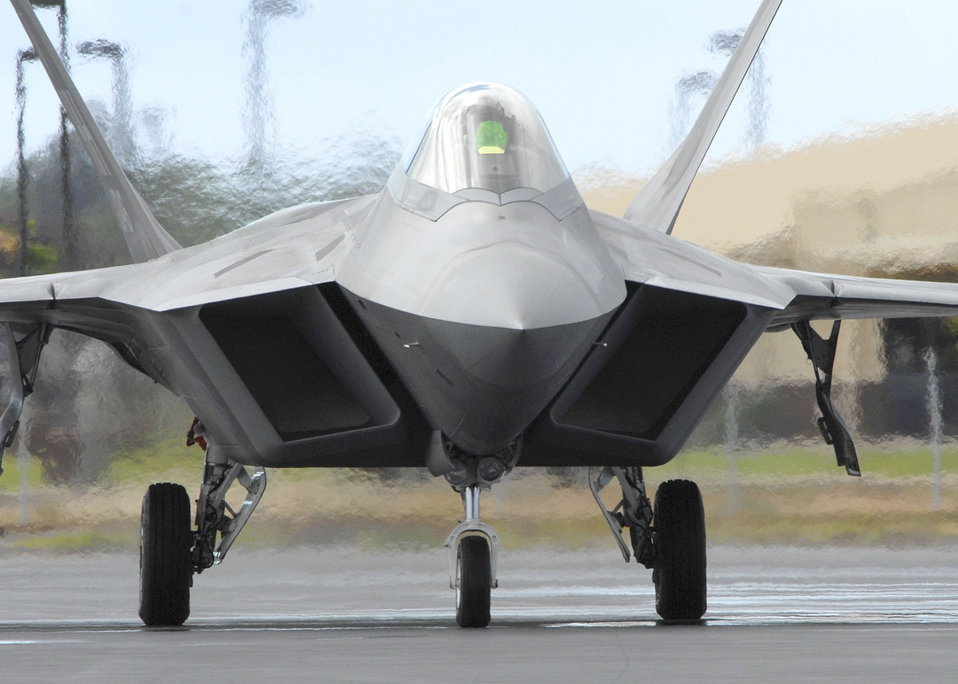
F-22 Raptors in Hawaii

A pilot taxies in an F-22 on the flightline July 9, 2010, at Joint Base Pearl Harbor-Hickam, Hawaii. The Hawaii Air National Guard's 199th Fighter Squadron is transitioning from the F-15 Eagle and will serve as the only ANG led joint guard and active-duty squadron in the Pacific.